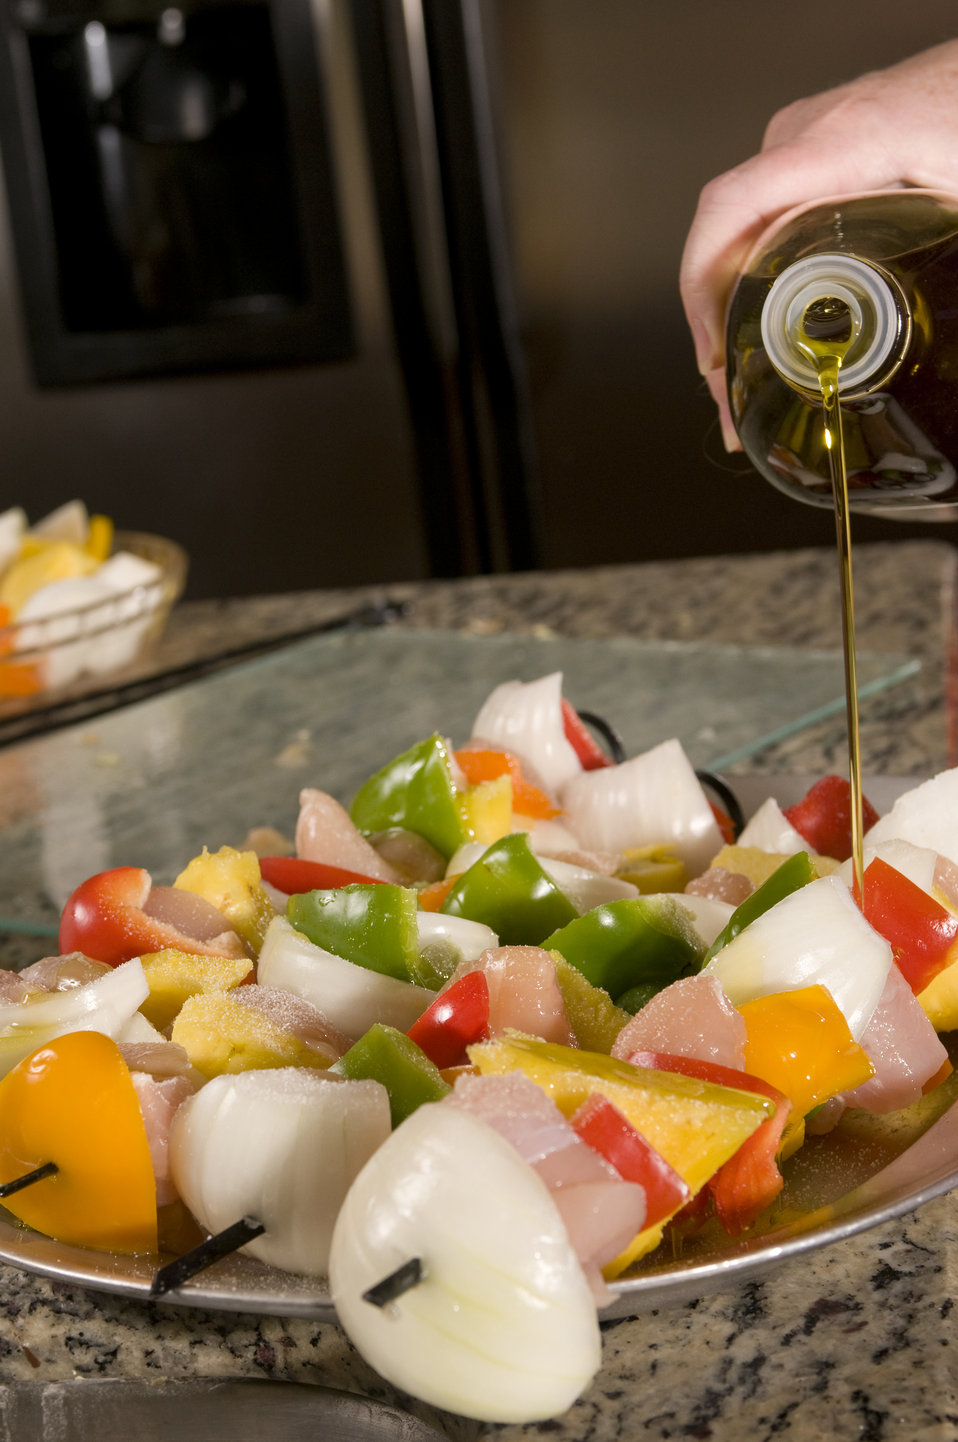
At this point in the food preparation process, this cook had assembled four kabobs consisting of various-colored bell peppers, pieces of sweet onion, chunks of deboned chicken breast meat, and pieces of fresh cut pineapple. We can see the cook about to add some extra virgin olive oil to the skewers prior to thoroughly cooking this food.